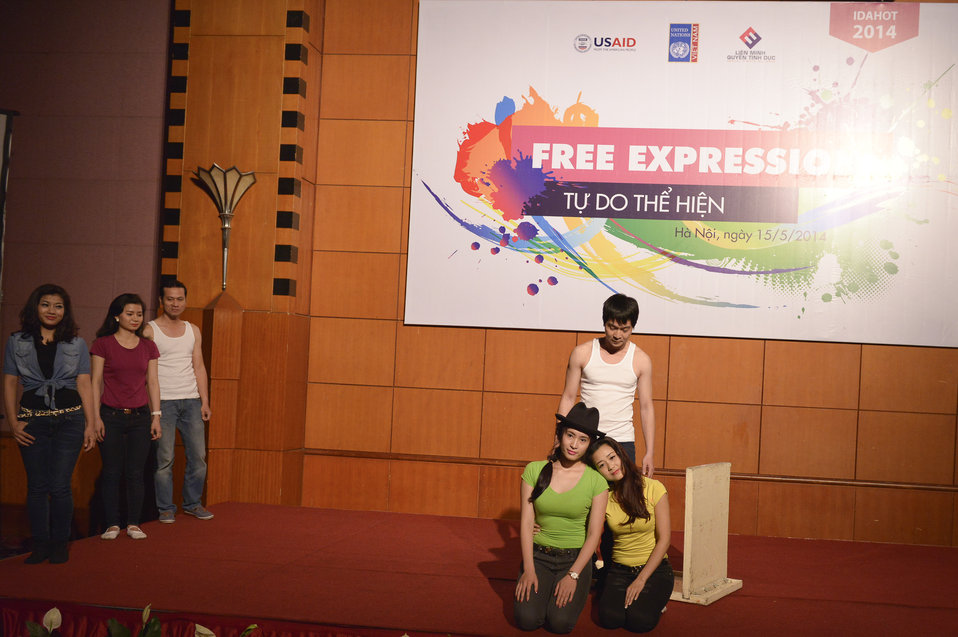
USAID supports celebration of IDAHOT Day 2014 in Hanoi

Hanoi, May 15, 2014.